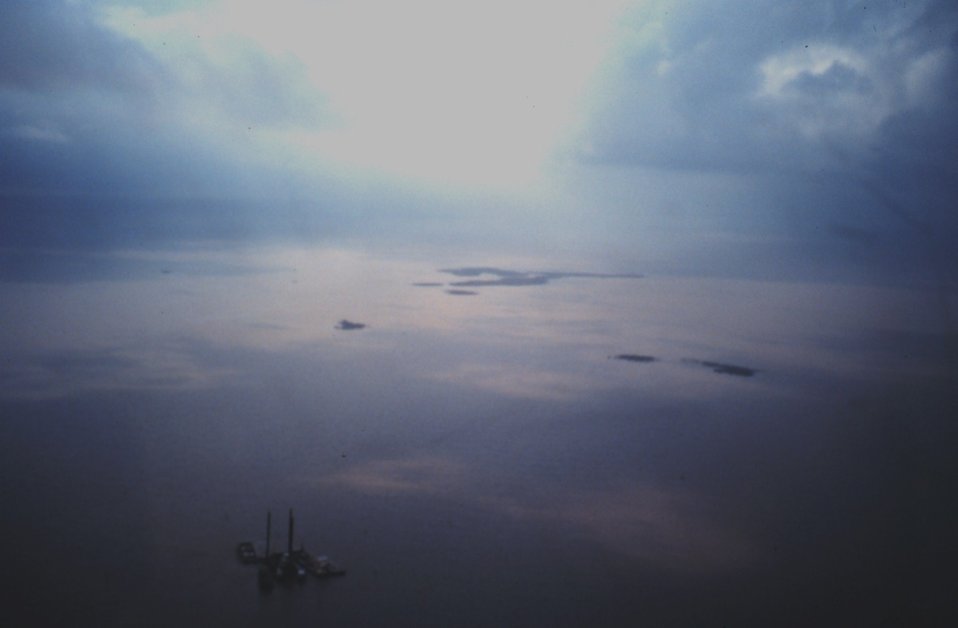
Dixon Bay well site - seen of a blow out and oil spill as seen from the air